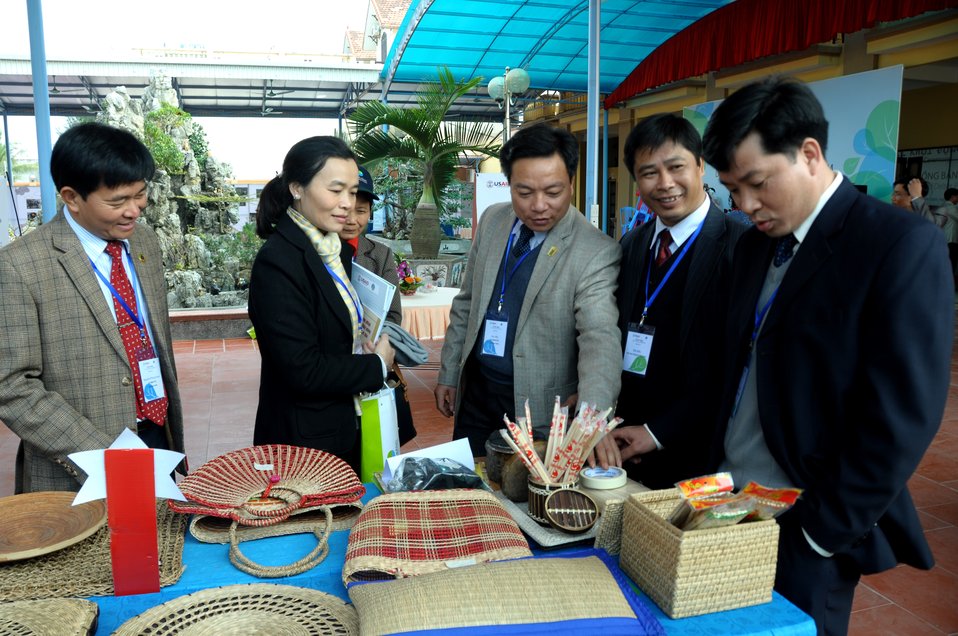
USAID launches the Vietnam Forests and Deltas project in Nam Dinh province.

Quat Lam, Nam Dinh. January 16, 2014.